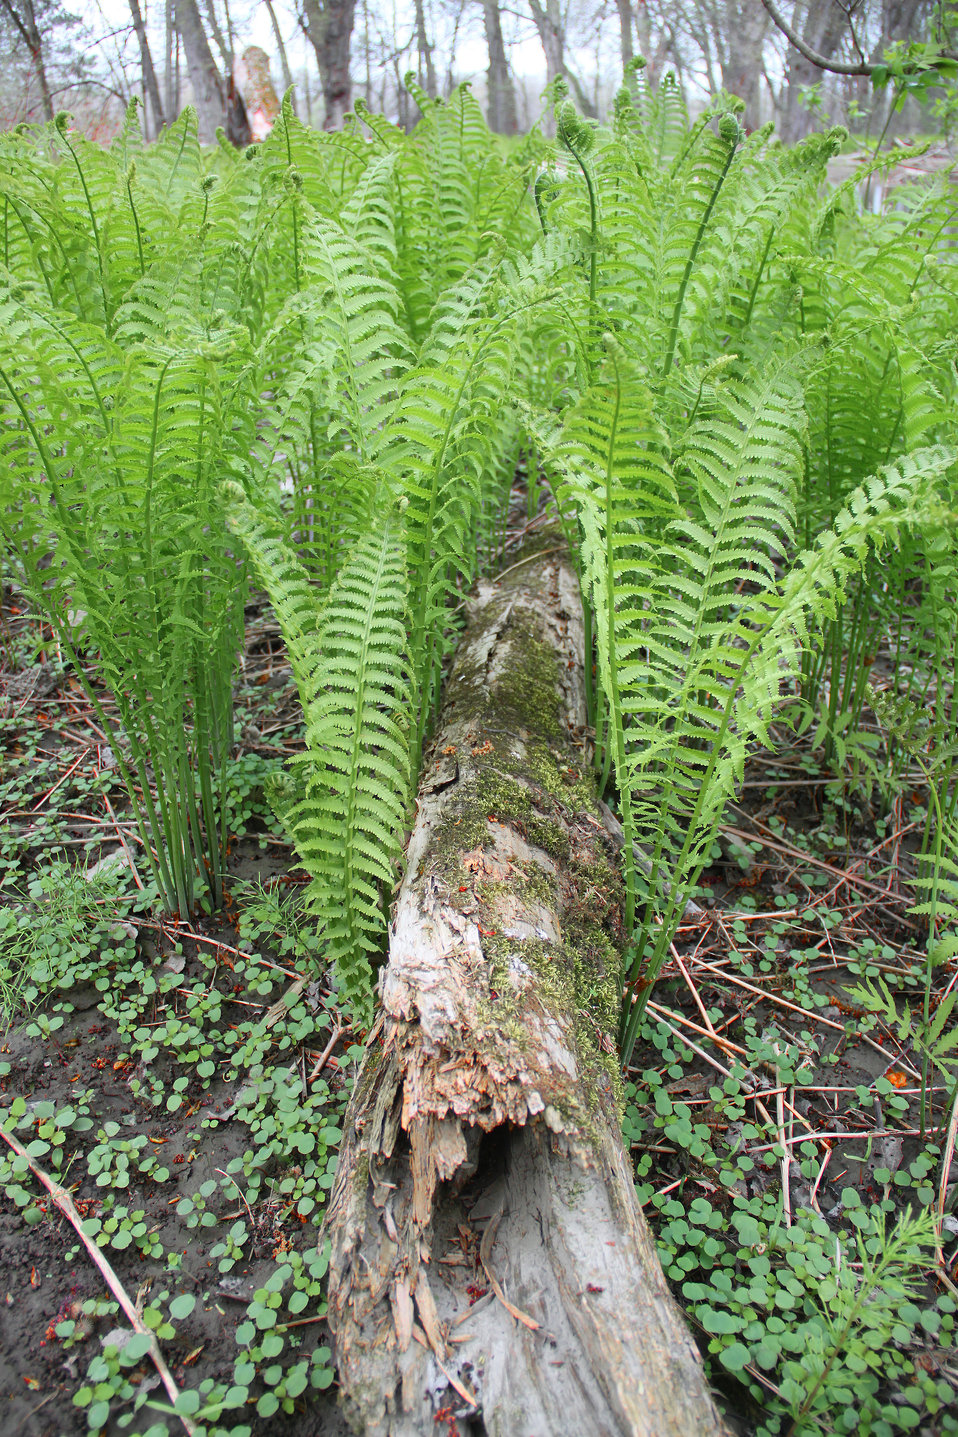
Ferns and log

Photo Credit: Ken Sturm; USFWS